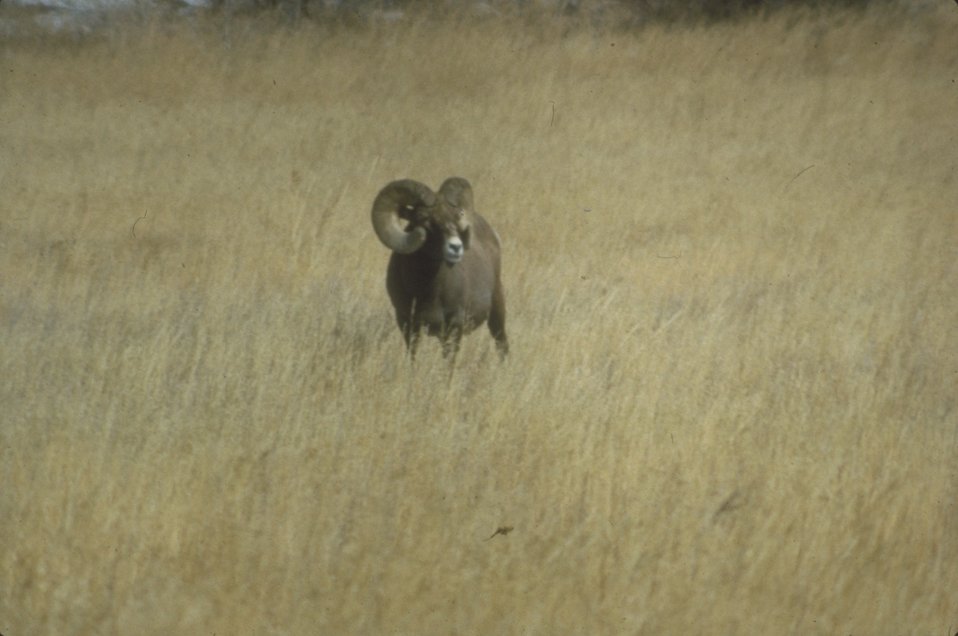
Rocky Mountain big horn sheep